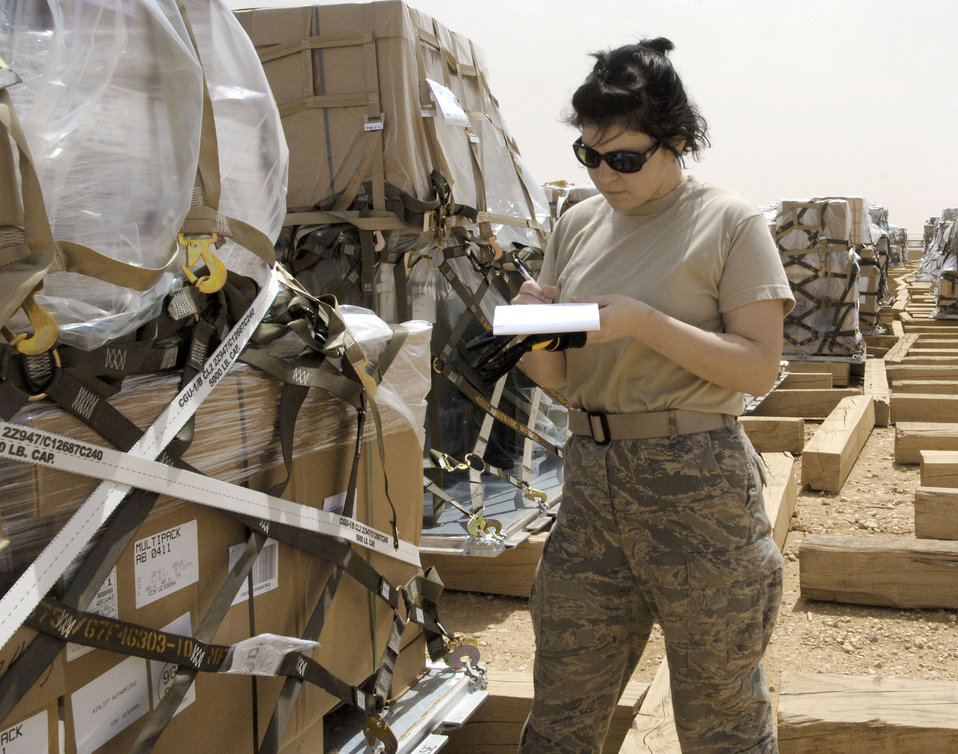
Aerial porters unload cargo for all of Iraq

Airman 1st Class Arielle Schultz inventories cargo April 20, 2011, at Al Asad Air Base, Iraq. The flight recently took on a commercial cargo mission and made history by unloading its first Boeing 747 earlier this month. Airman Schultz is an aerial porter assigned to the 532nd Expeditionary Operations Support Squadron Air Mobility Flight.